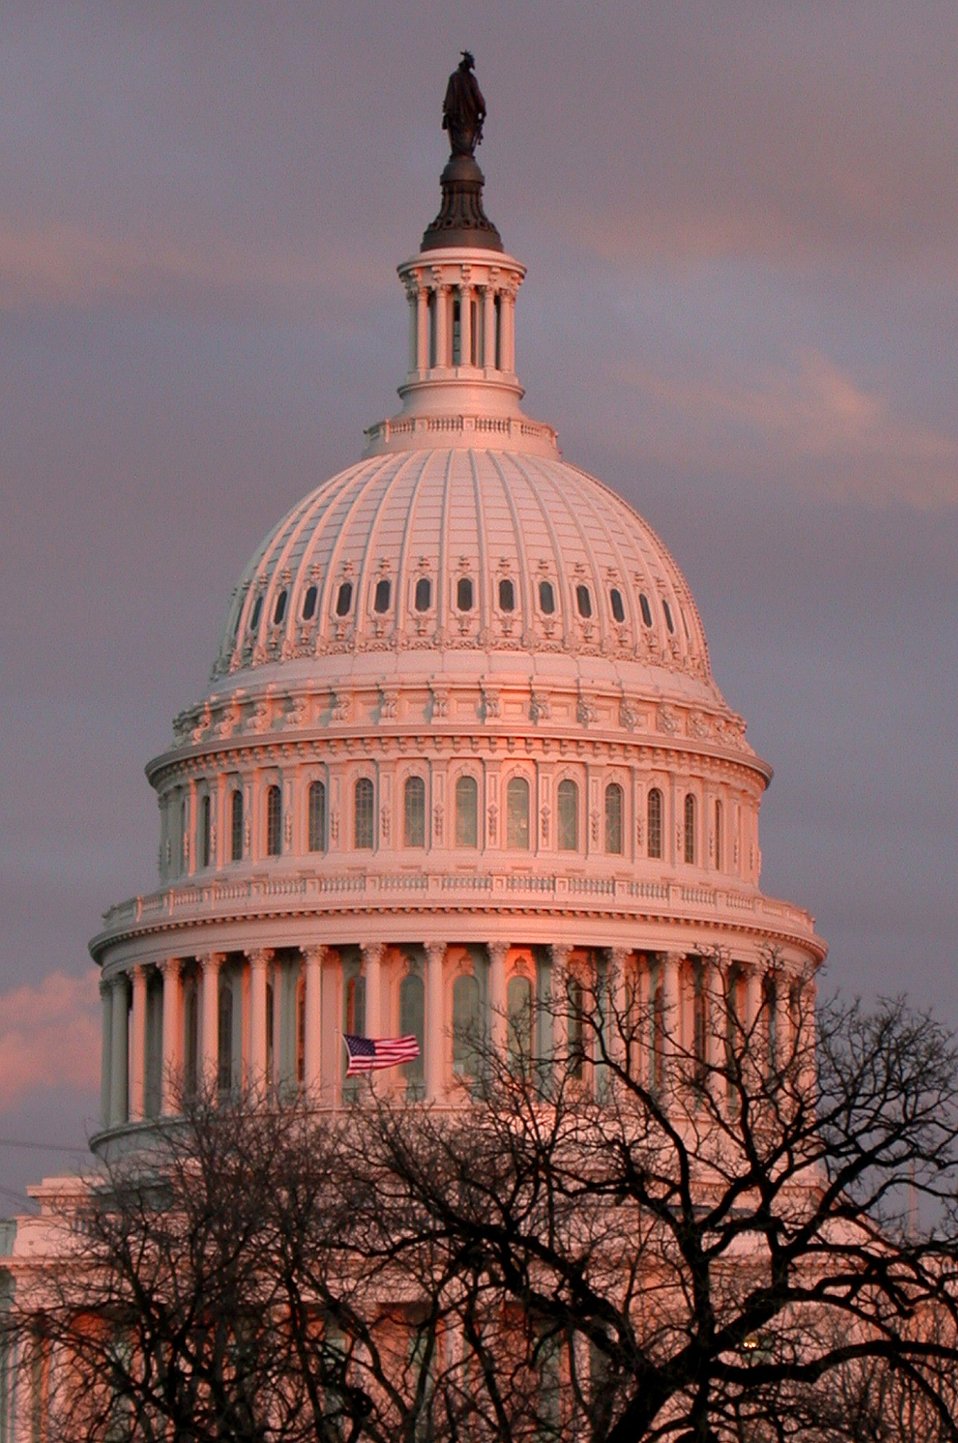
United States Capitol building.